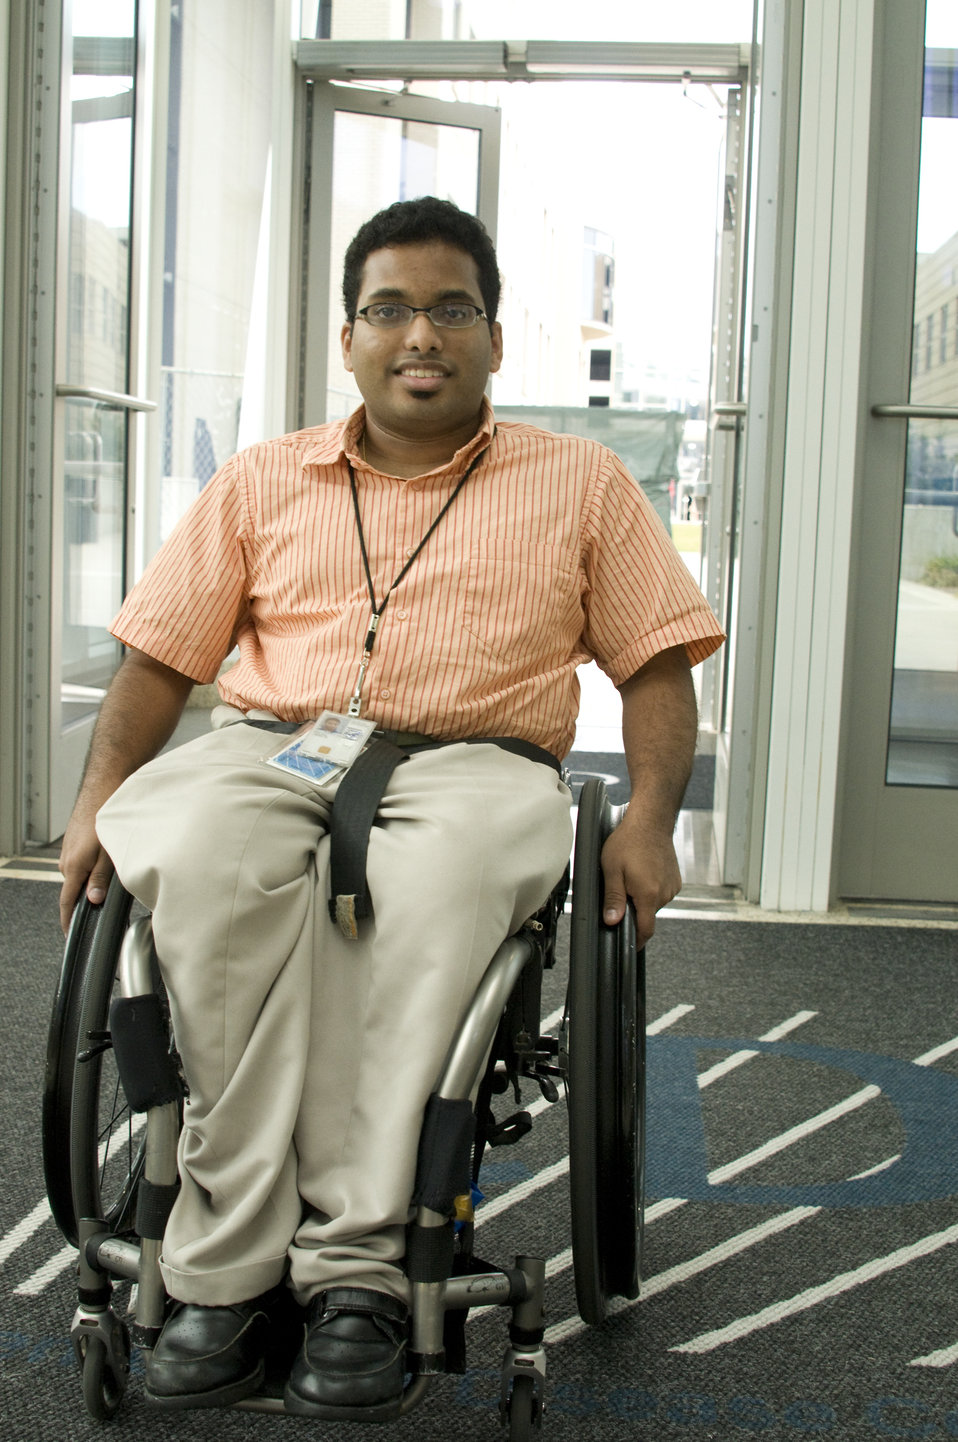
The man depicted here was in the process of entering a building on one of the Centers for Disease Control and Prevention's (CDC) campuses. He was seated in a wheelchair after having passed through the mechanized doors, and was moving forward into the buildings atrium.